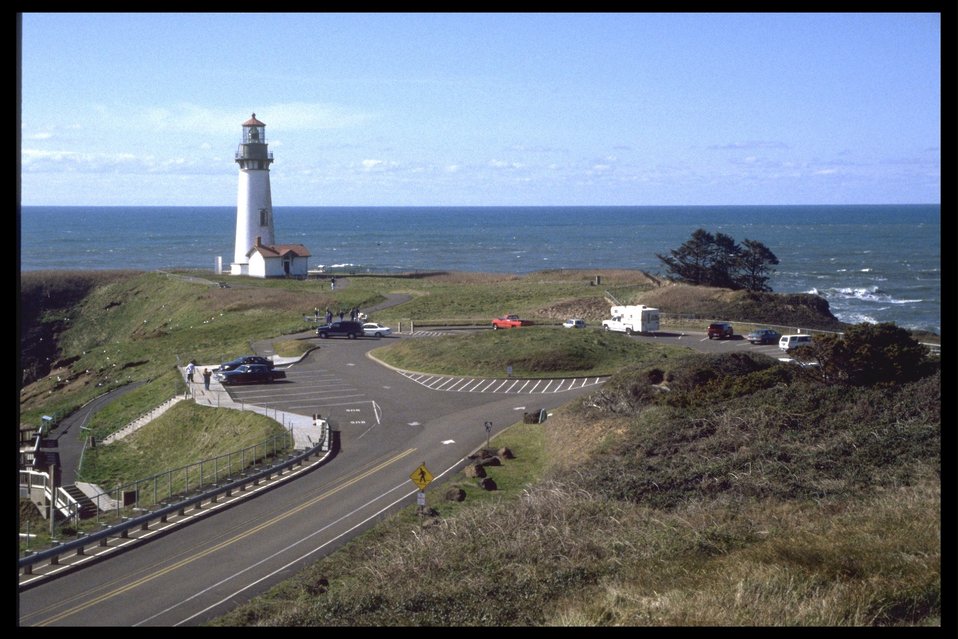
Yaquina Head Lighthouse.